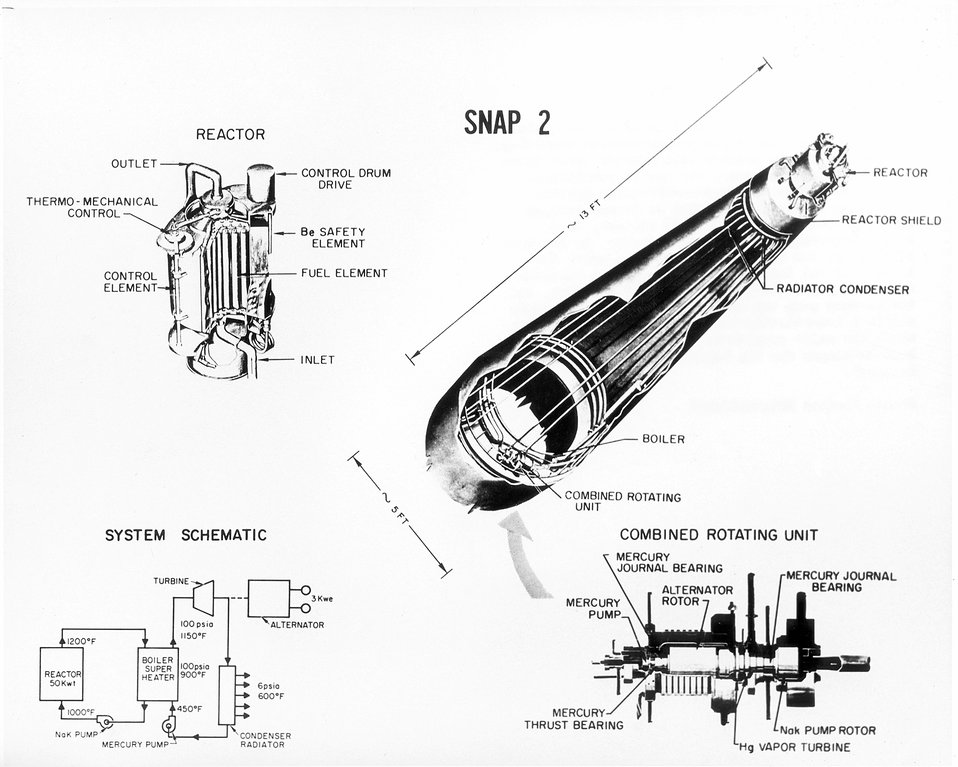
About the size of a five-gallon can and weighing about 200 pounds without shielding, the compact SNAP-2 reactor will provide three electric kilowatts of power for use in satellites.